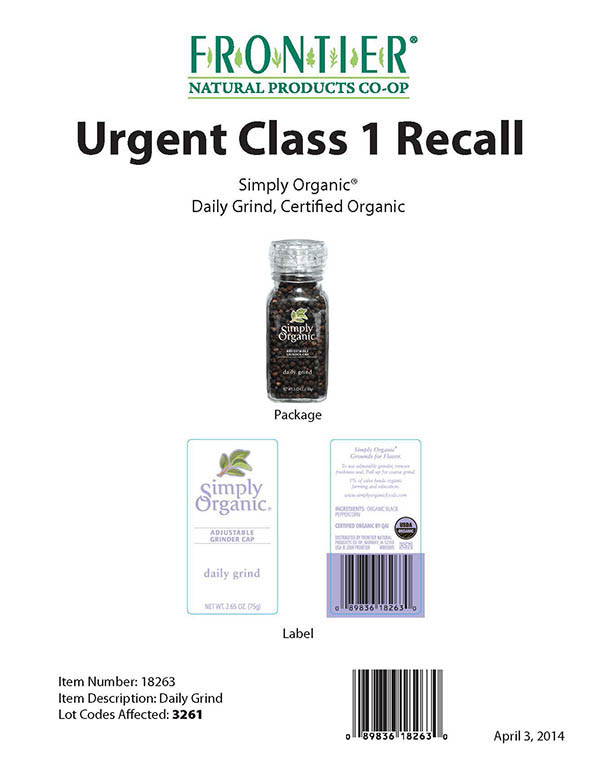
RECALLED – Organic Black Peppercorns

April 4, 2014 – Product Recall – Frontier Natural Products Co-op Initiates Voluntary Class 1 Recall Due to Possible Health Risk from Organic Black Peppercorns.